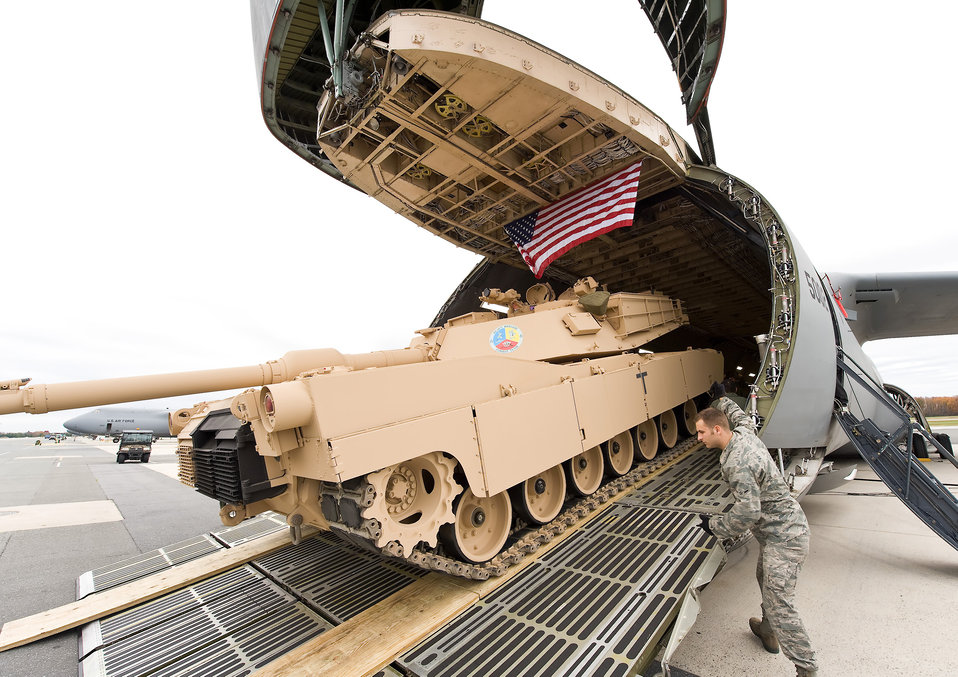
No load too big

Airmen load a tank into a C-5M Super Galaxy Nov. 15, 2011, at Dover Air Force Base, Del. The C-5M is the upgraded version of the C-5 Galaxy and has a 30 percent shorter take off roll, 58 percent faster climb rate and allows significantly more cargo to be carried over longer distances.